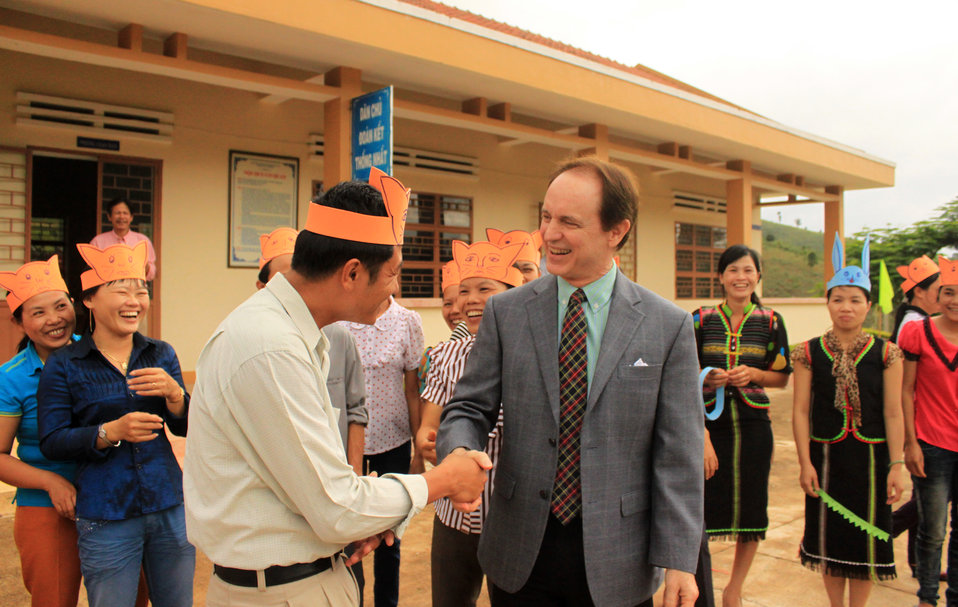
USAID Mission Director Francis Donovan joins local teachers as they practice what they learned from USAID-funded intensive training courses